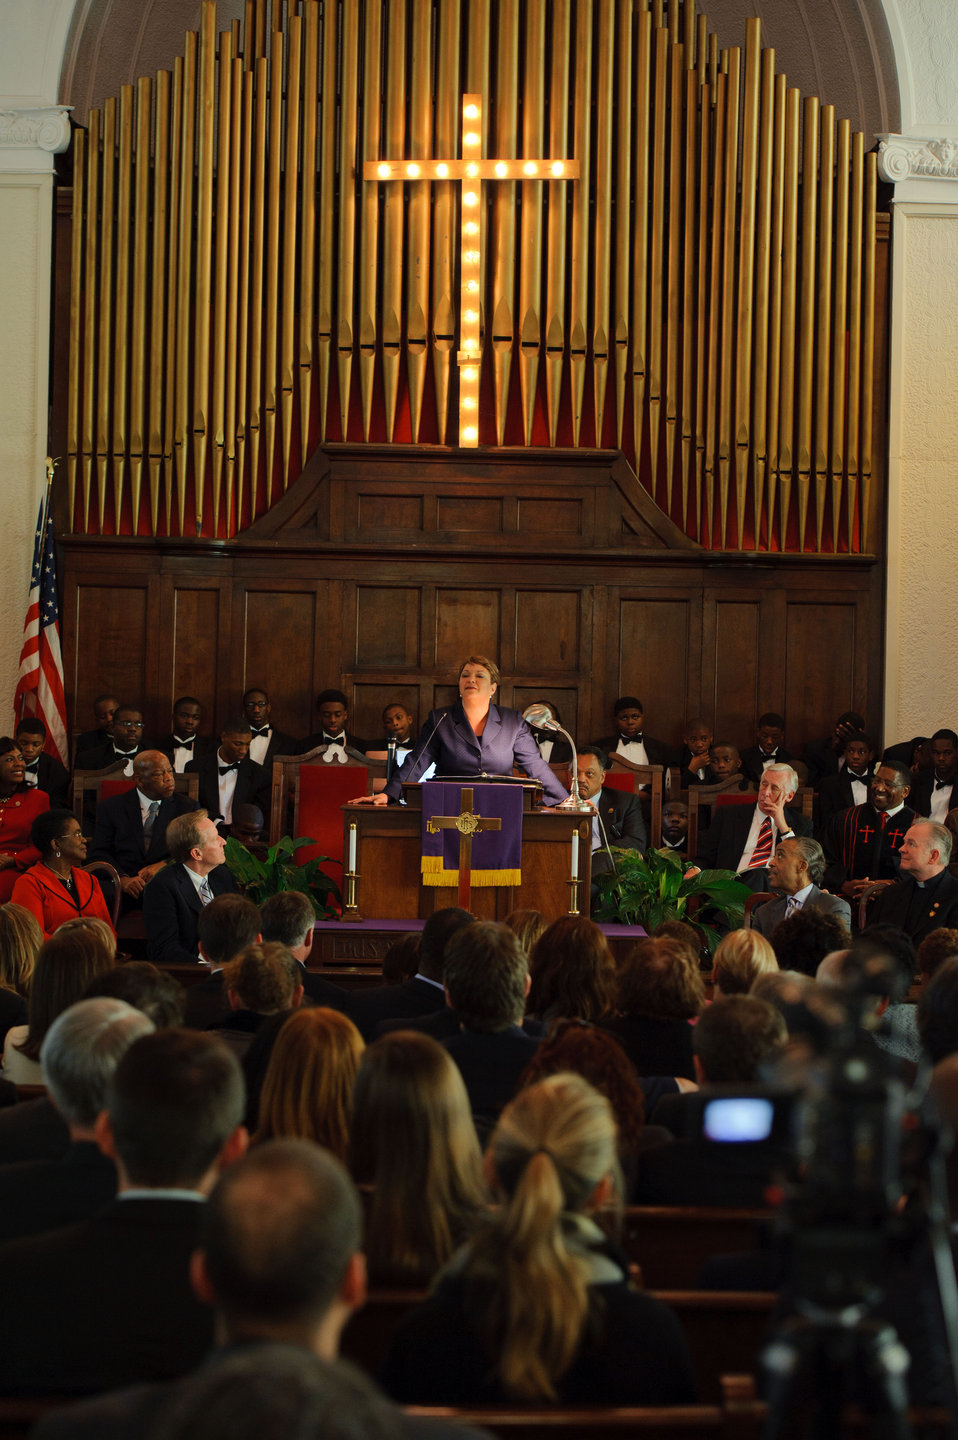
March 4, 2012, EPA Administrator speaks to congregation at historic Brown Chapel AME

As part of the 12th Congressional Civil Rights Pilgrimage Events, Administrator Jackson spoke to the Brown Chapel AME congregation in Selma, Alabama.

While in Selma, Administrator Jackson also visited the Voting Rights Museum and joined community leaders in a nearly 2-mile march across the Edmund Pettus Bridge, a re-enactment of the march from the Brown Chapel that took place in 1965.